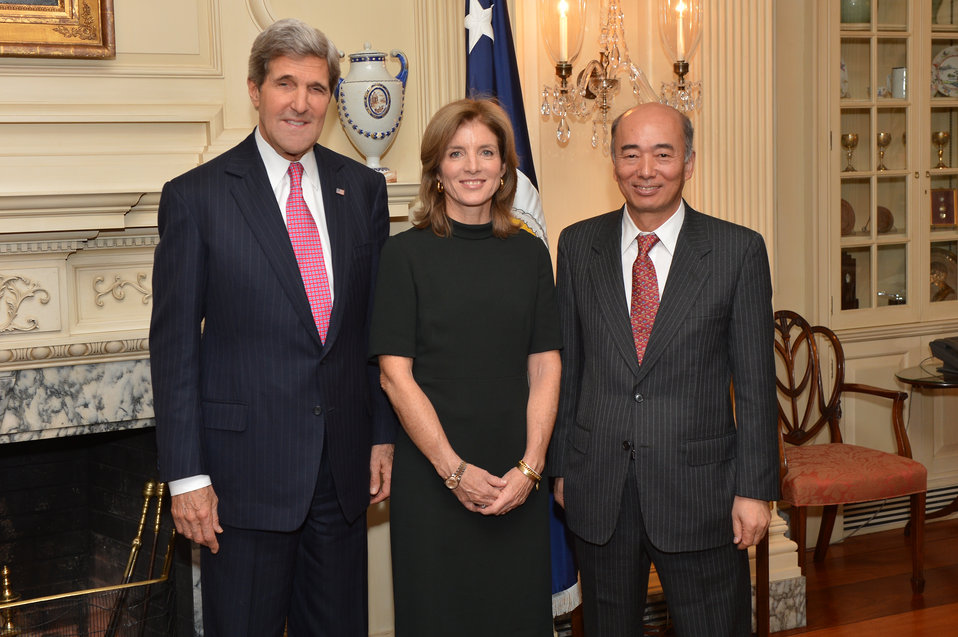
Secretary Kerry, Ambassador Kennedy, and Ambassador Sasae Pose for a Photo

U.S. Secretary of State John Kerry, U.S. Ambassador to Japan Caroline Kennedy, and Japanese Ambassador to the U.S. Kenichiro Sasae pose for a photo during Ambassador Kennedy's swearing-in ceremony at the U.S. Department of State in Washington, D.C., on November 12, 2013.